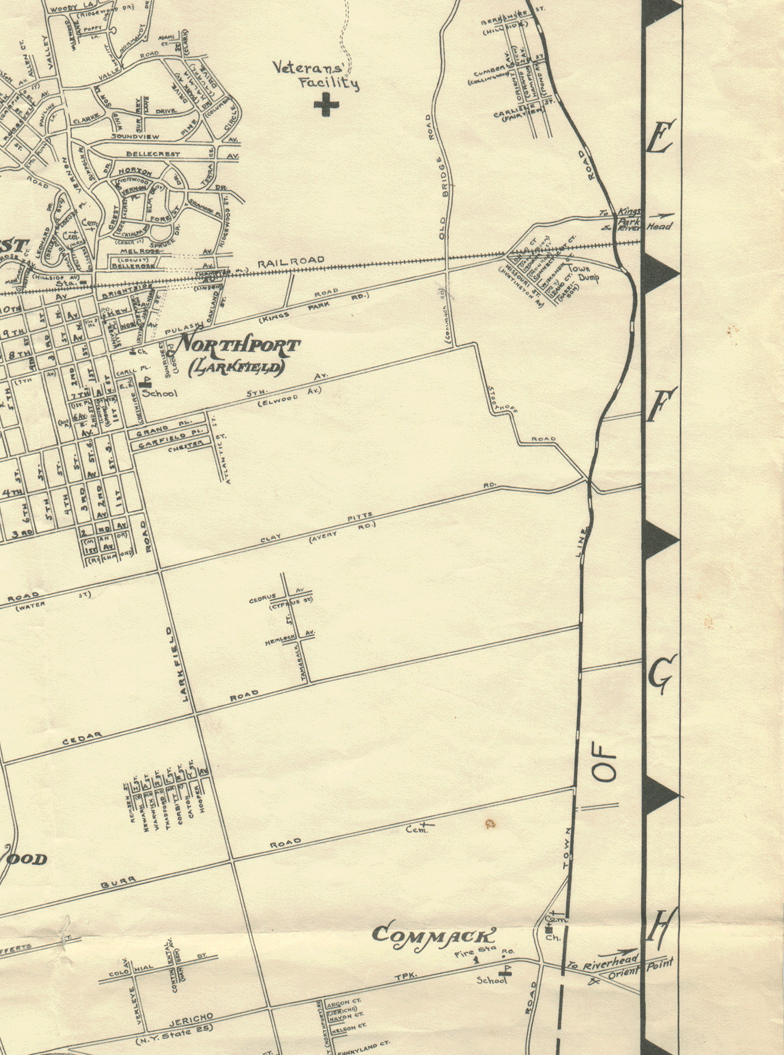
1946 Huntington Map sect08